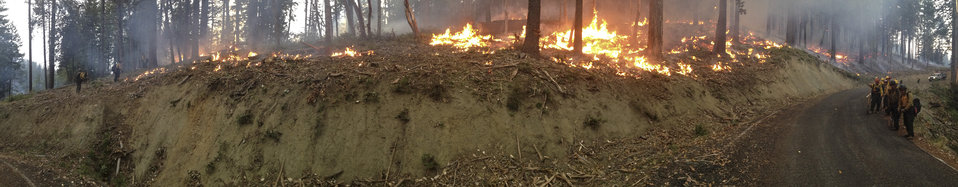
Panorama of the Geronimo Interagency Hotshot Crew (IHC) keeps watch on their burnout along a forest road. This will help stop the main fire when it comes to this location in the Big Windy Complex, approximately 15 miles west of Interstate 5 and northeast of Galice, OR, on Friday, Aug 9, 2013 in Oregon. The Geronimo Hotshots are from the San Carlos Apache Tribal Natural Resources Program, in San Carlos AZ. Hotshots are highly trained wildlands firefighters that normally work in remote locations under arduous conditions.